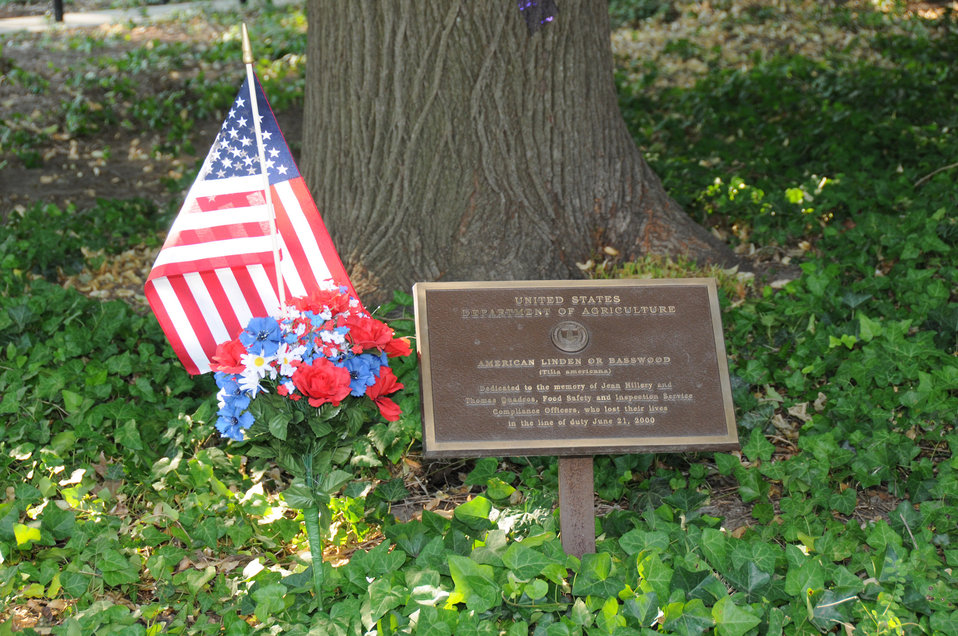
An American Linden or Basswood tree was dedicated at a ceremony to honor slain Food Safety Inspection Service Compliance Officers Jean Hillery and Thomas Quadros who were gunned down in the line of duty while inspecting a processing plant in CA. The ceremony was held at the U.S. Department of Agriculture in Washington, DC, on Monday June 21, 2010. USDA Photo 10di1413-0043.